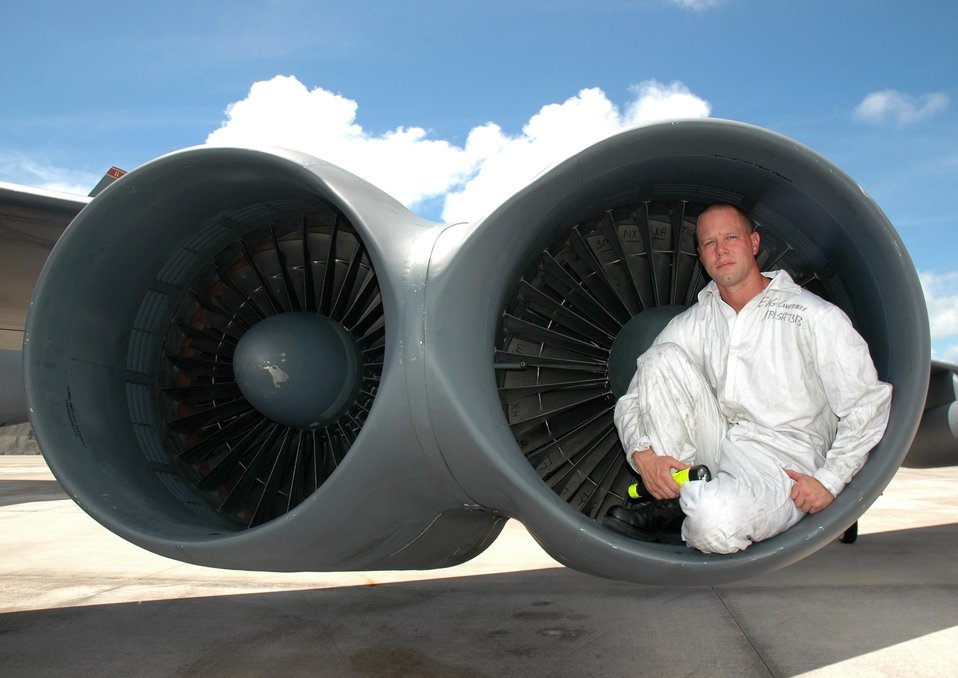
Air Force birthday

Tech. Sgt. Timothy Scheaffer prepares to do engine work on a B-52 Stratofortress at Andersen Air Force Base, Guam, on Sept. 18, 2006. He is an aerospace propulsion craftsman deployed to the 36th Expeditionary Aircraft Maintenance Squadron at this base from Minot Air Force Base, N.D.